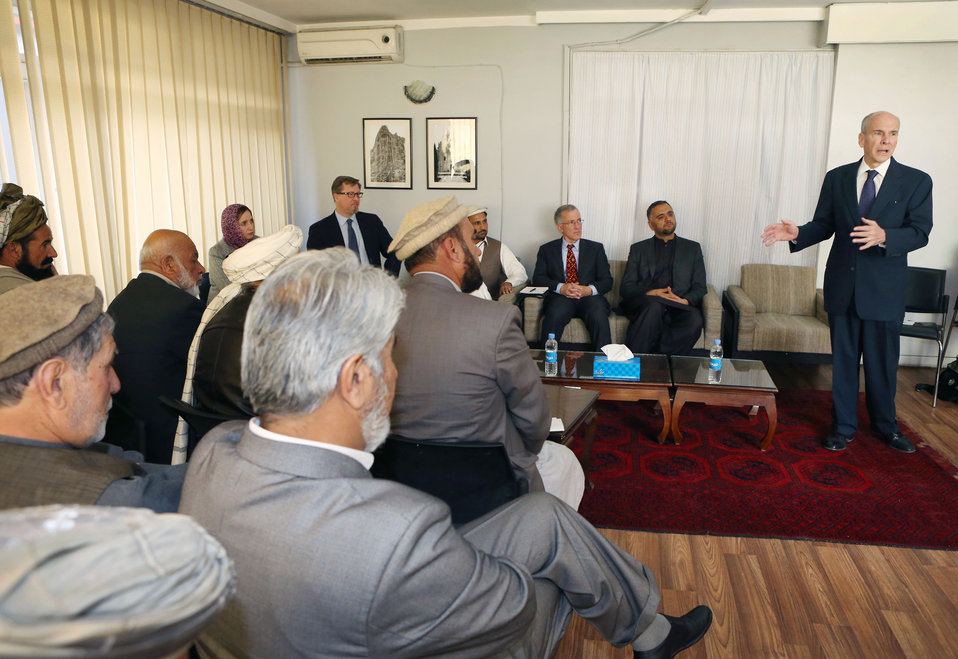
Deputy Ambassador P. Michael McKinley and USAID Mission Director William Hammink met with elders from Khost, Logar, and Paktiya on April 16, 2014 in Kabul. The elders provided community perspectives on rule of law, peace, security, and post-election Afgha